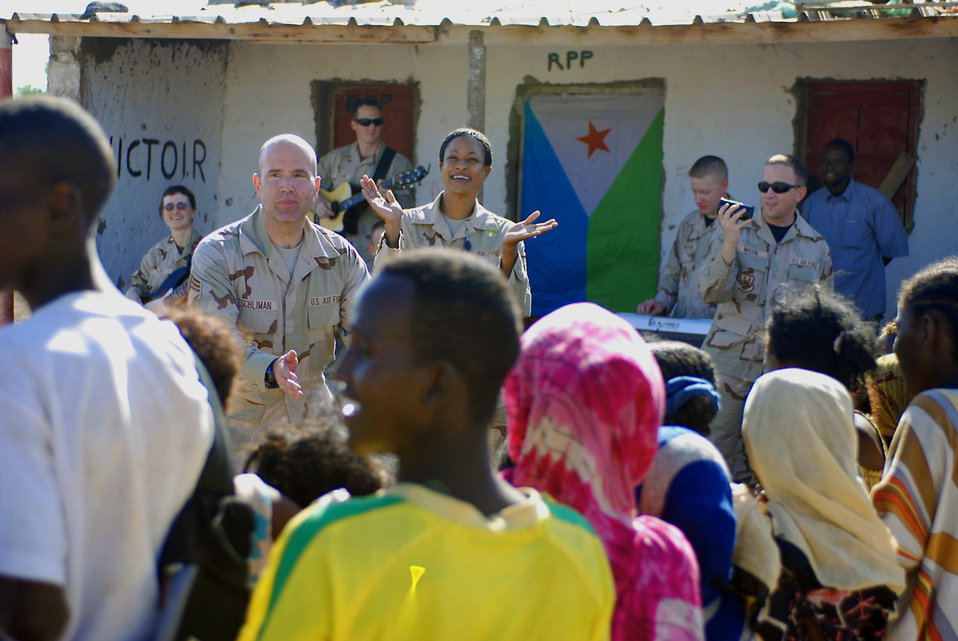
Airmen, Marines team up for Djibouti humanitarian mission

The members of the U.S. Central Command Air Forces' Expeditionary Band Live Round play a series of pop and classic rock songs for villagers Oct. 23 in Nagad, Djibouti. The band is touring Djibouti to perform a series of morale and community outreach concerts.